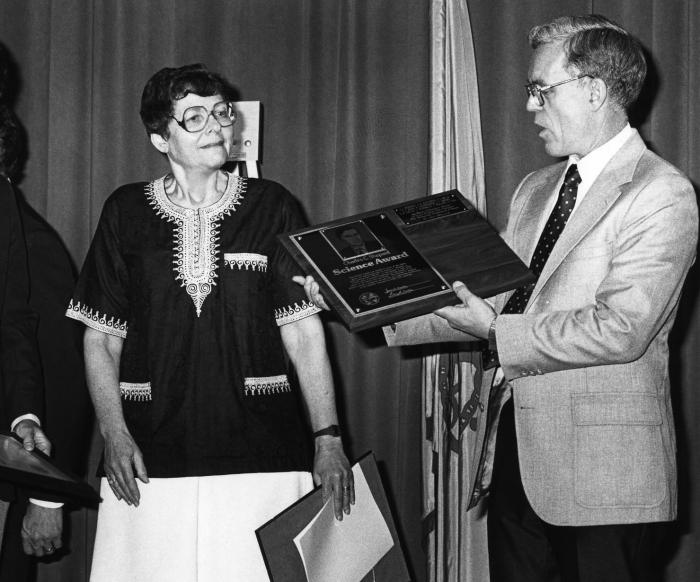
This 1986 photograph depicted the Centers for Disease Control Director at that time, Dr. James O. Mason (right), handing out the first Charles C. Shepard Science Award to agency staff member Gloria W. Ajello, M.S.